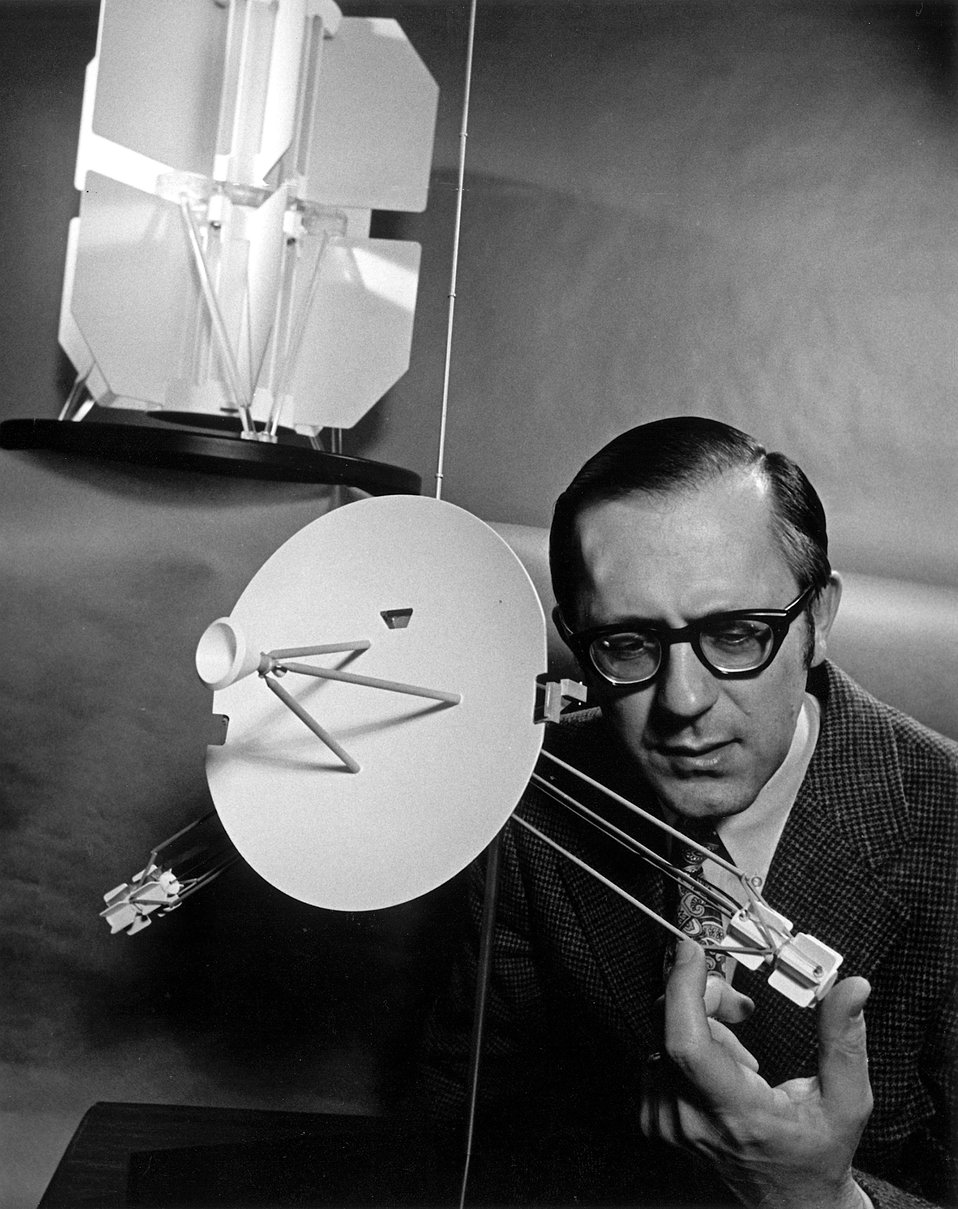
One of the two tandem sets of nuclear generators on a model of NASA's Pioneer spacecraft is being inspected by Bernard J. Rock, AEC SNAP-19/Pioneer radioisotope thermometric generator program manager.